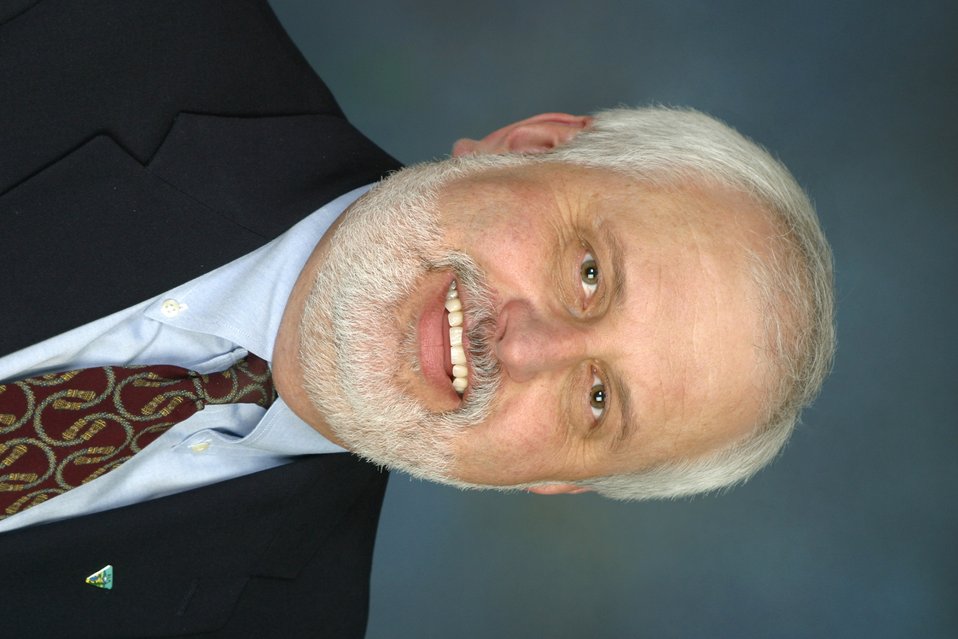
Chuck Wassinger Associate State Director